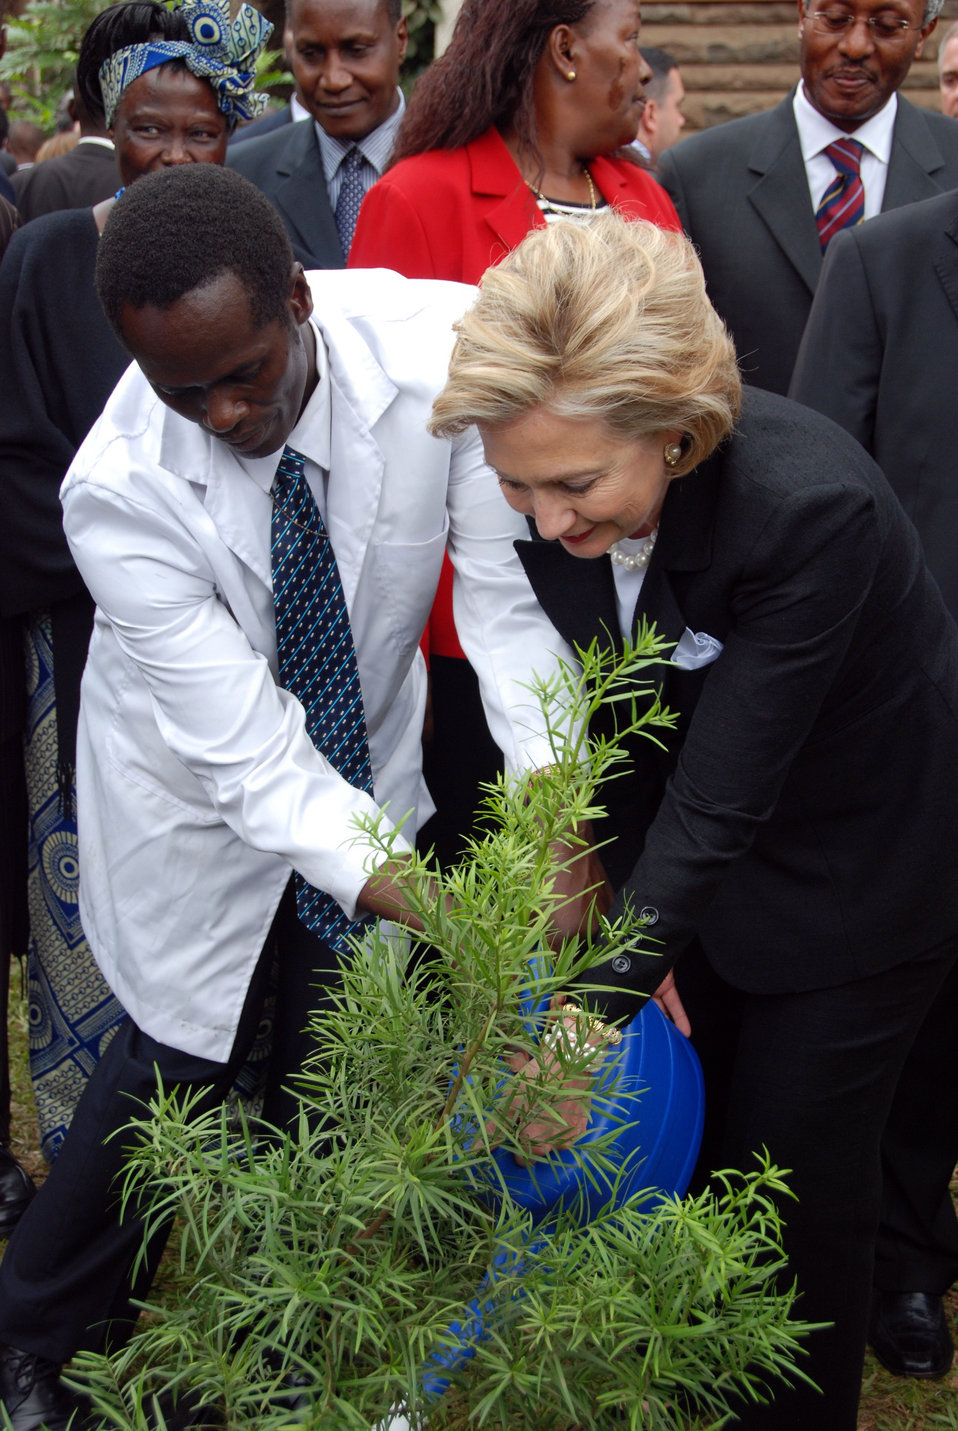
Secretary Clinton Ceremonial Tree Planting

U.S. Secretary of State Hillary Rodham Clinton participates in a ceremonial tree planting at Nairobi University in Nairobi, Kenya August 6, 2009.